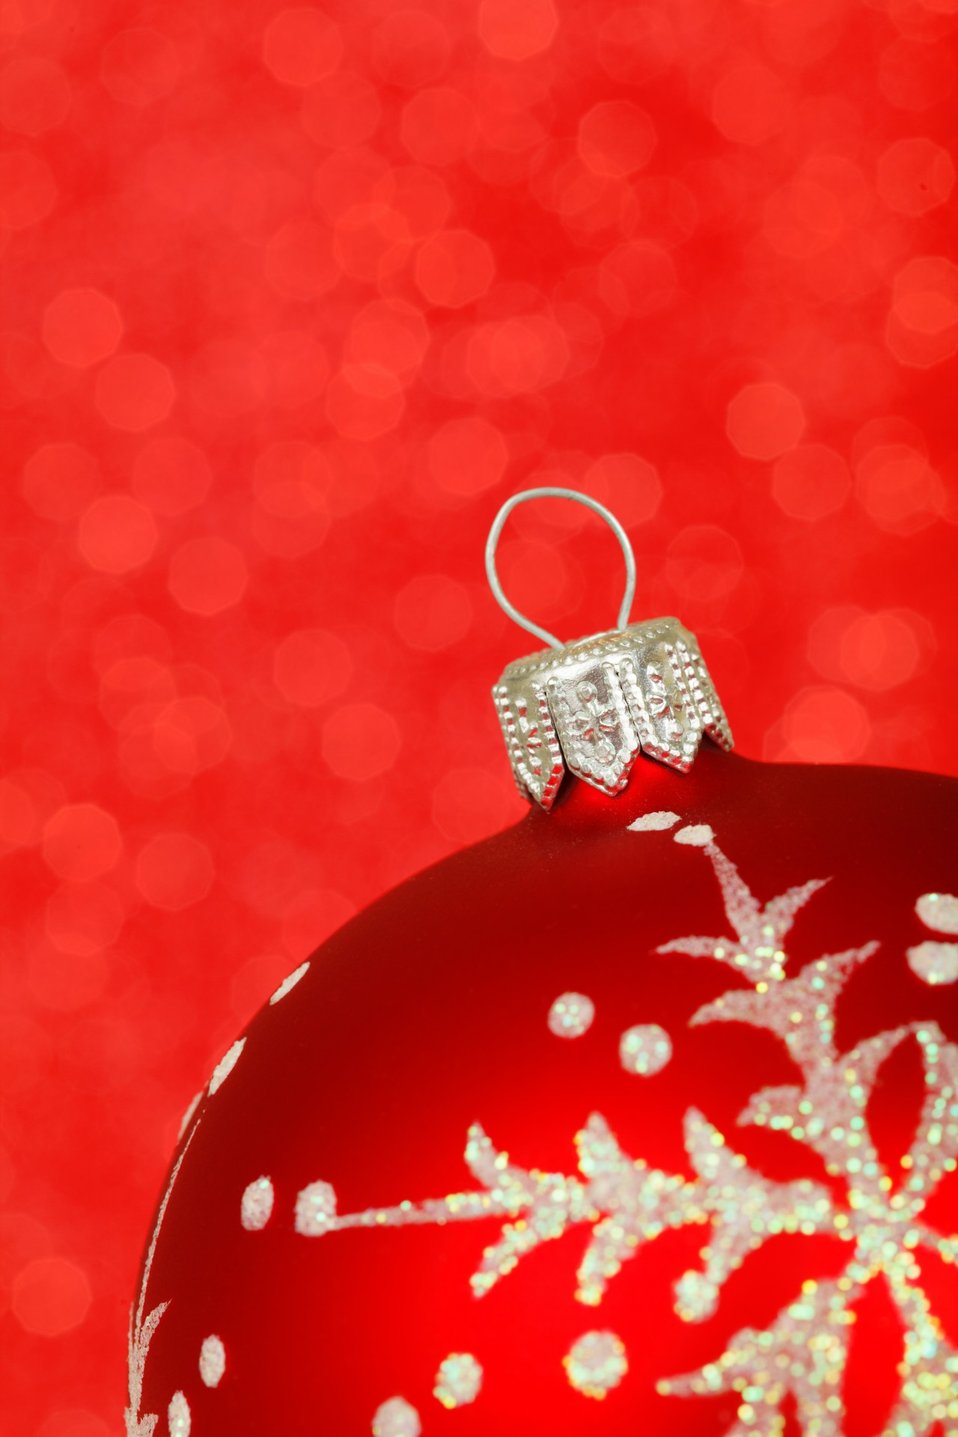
Red christmas ball ornament on a red background.